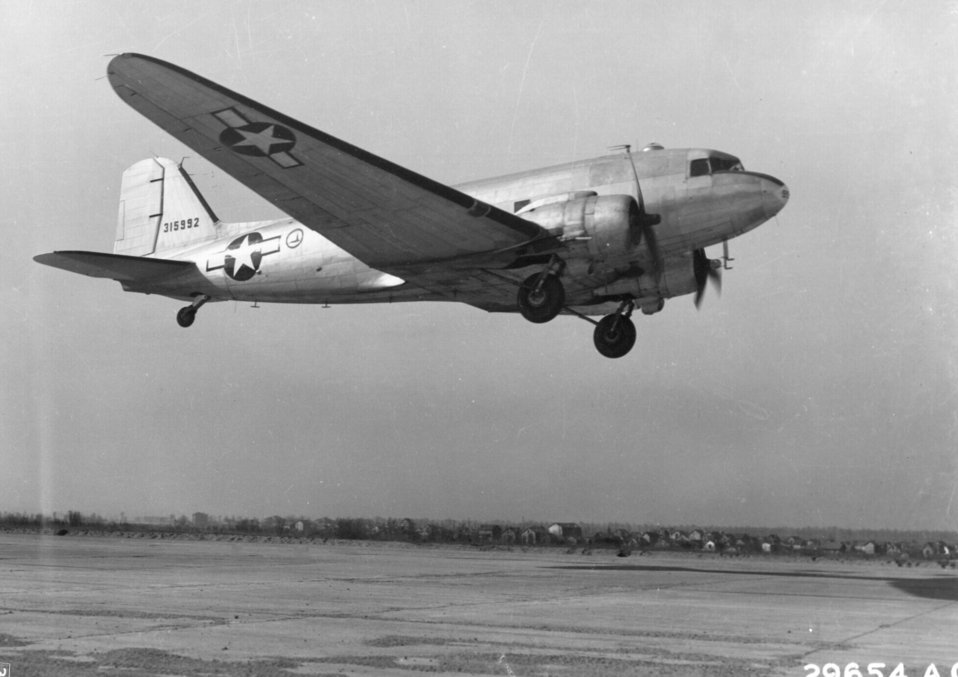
Douglas C-47

1940's -- Douglas C-47